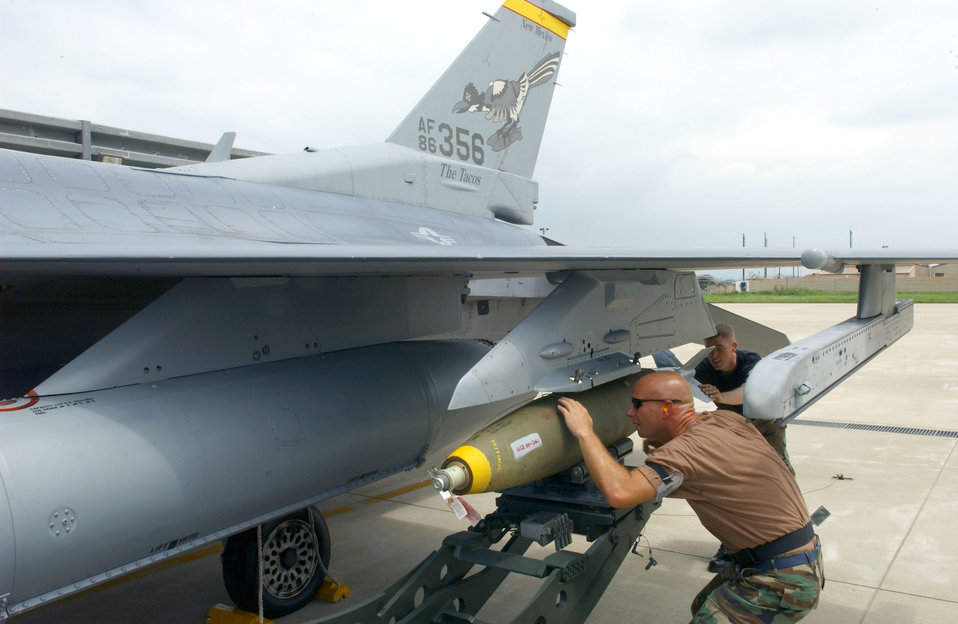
Air Guard flying in Korea

Tech. Sgt. Mike Geske, front, and Staff Sgt. Carl Valvota secure a Mark 82 bomb to an F-16 Fighting Falcon at Kunsan Air Base, South Korea, on July 5. The aircraft is from the New Mexico Air National Guard's 150th Fighter Wing at Albuquerque.